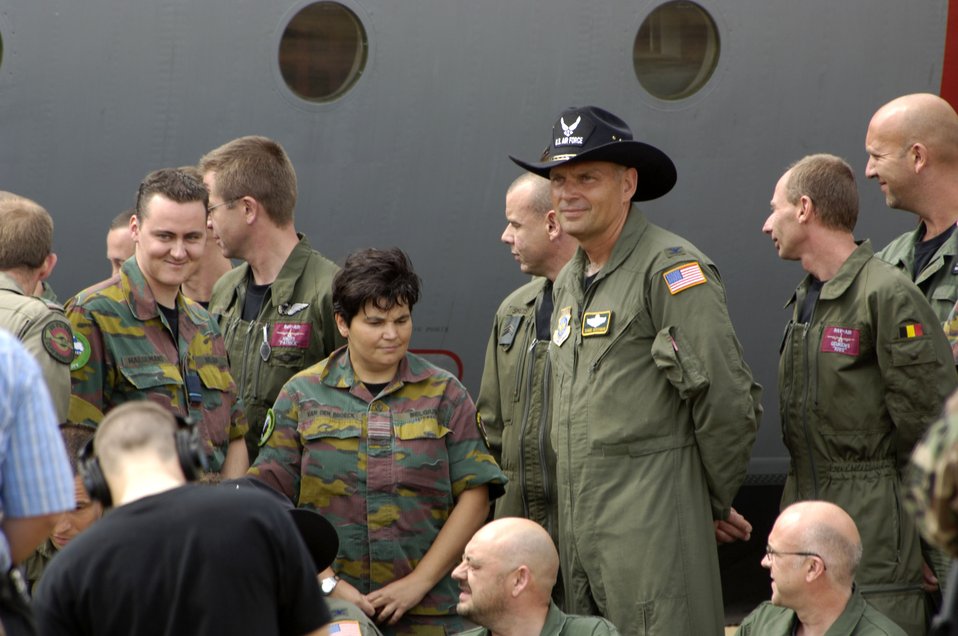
Rodeo 2007

Col. Shane Hershman (in cowboy hat) greets the Belgium Rodeo 2007 team upon their arrival July 16 at McChord Air Force Base, Wash. Rodeo 2007, hosted by Air Mobility Command, is a readiness competition of U.S. and international mobility forces. It focuses on improving warfighting capabilities and support of the war on terrorism. Colonel Hershman is a Rodeo 2007 official.